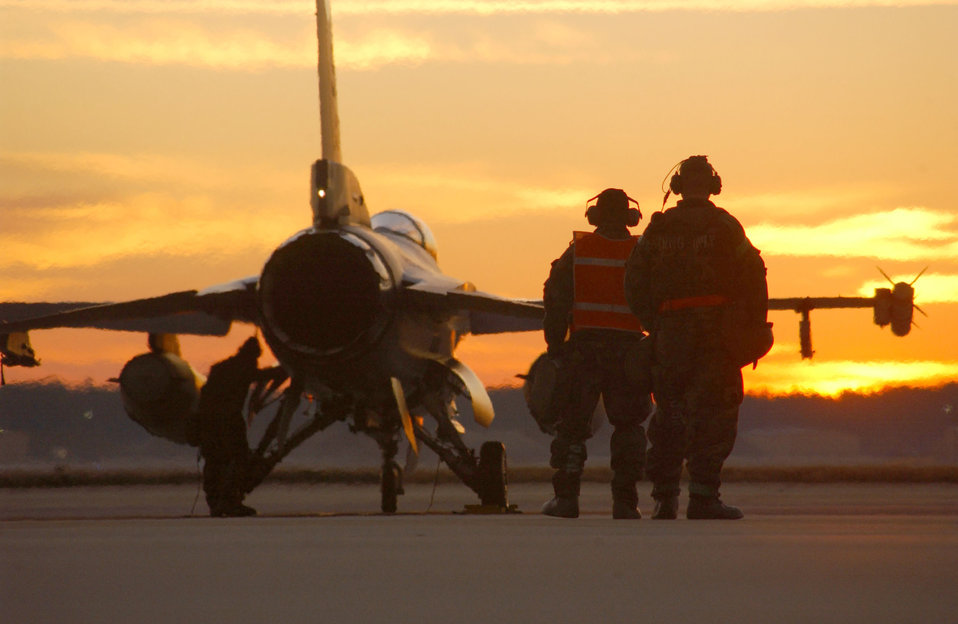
Sea Lion

Tech. Sgt. Aubrey Dickerson and Master Sgt. Tracey Shook prepare to launch an F-16 Fighting Falcon on a sortie in support of a Phase 2 exercise Dec. 6 at Shaw Air Force Base, S.C. The war-like exercise prepares Airmen for deployments.